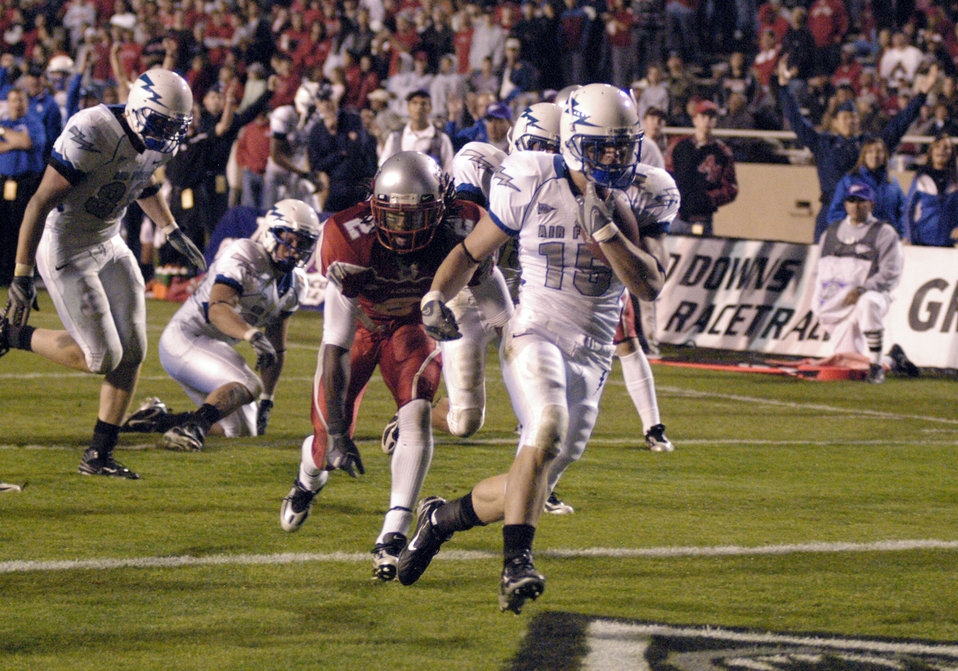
Falcons self destruct in 34-31 loss

Falcon tailback Jim Ollis outruns New Mexico cornerback DeAndre Wright to the end zone during Air Force's 34-31 loss to the Lobos Oct. 25 at University Stadium in Albuquerque. Ollis' 8-yard touchdown gave his team a 31-28 lead after three quarters.